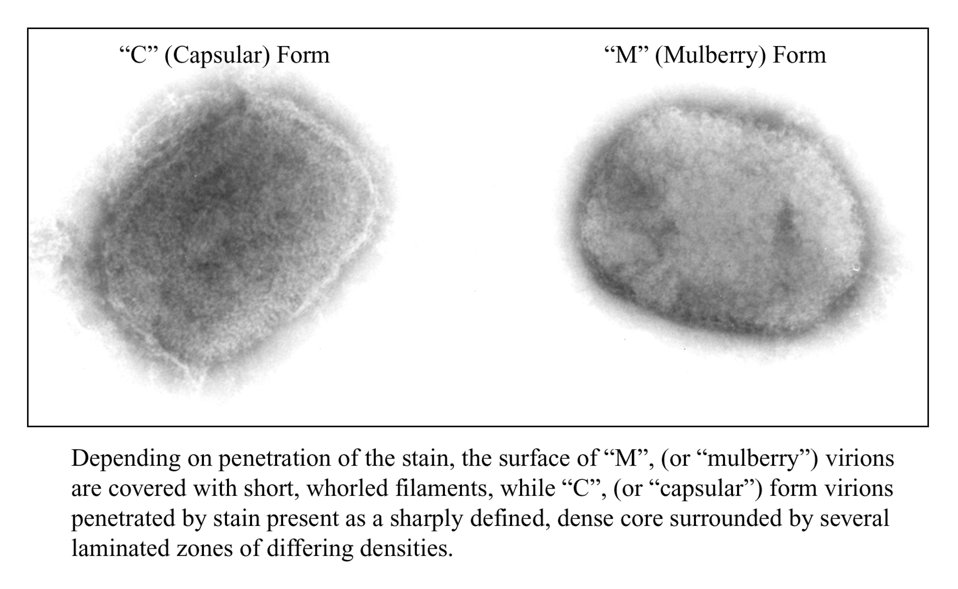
Here a negative stain electron micrograph demonstrates the two forms of the brick-shaped monkeypox virus from a cell culture.